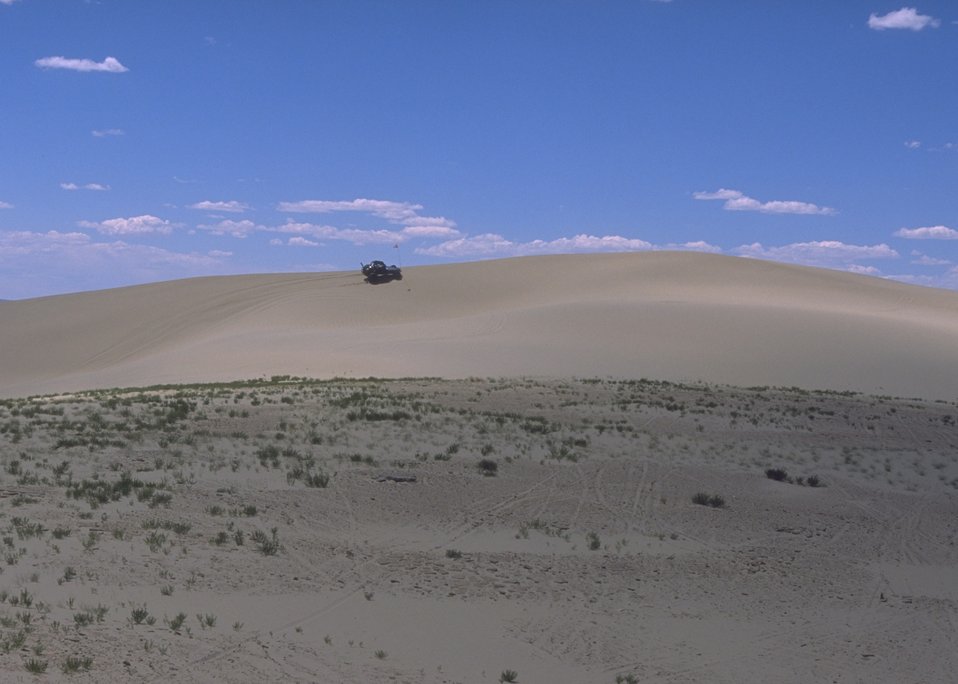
Sand Dunes OHV Area, Rock Springs Field Office.